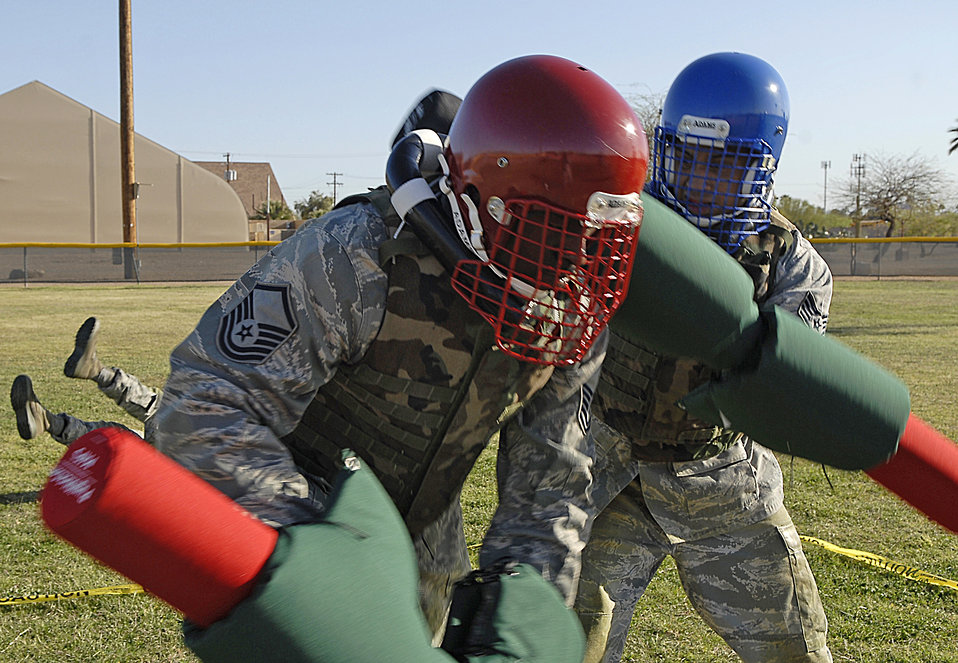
Luke Airmen train for combat

Staff Sgt. Jesus Artesi (right) hits Master Sgt. Glen Presswood with a pugil stick during a military combative training course April 6, 2010, at Luke Air Force Base, Ariz. The combative training course began April 1, 2010, and will continue until April 23, 2010. Sergeant Presswood is a 61st Aircraft Maintenance Unit support flight chief. Sergeant Artesi is a 56th Medical Support Squadron information technology specialist.